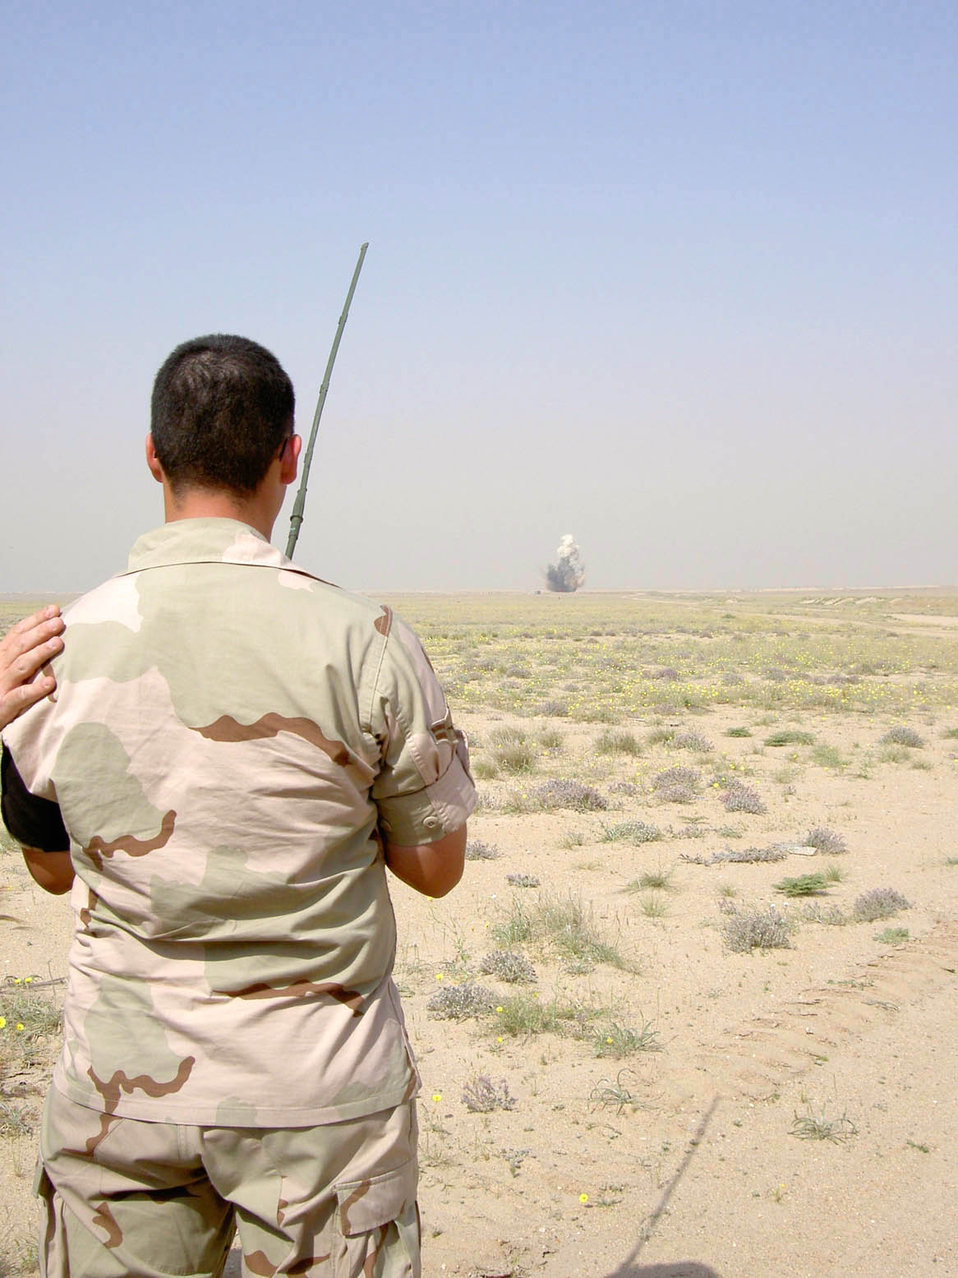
Airman finds, destroys UXO

SOUTHWEST ASIA -- Airman 1st Class Juan Jordan presses a button causing an explosion which destroyed the unexploded ordnance he discovered recently. He found a Russian-made bomb at a construction site at a forward-deployed location. He is an avionics sensors maintenance apprentice deployed from the 9th Aircraft Maintenance Squadron at Beale Air Force Base, Calif.